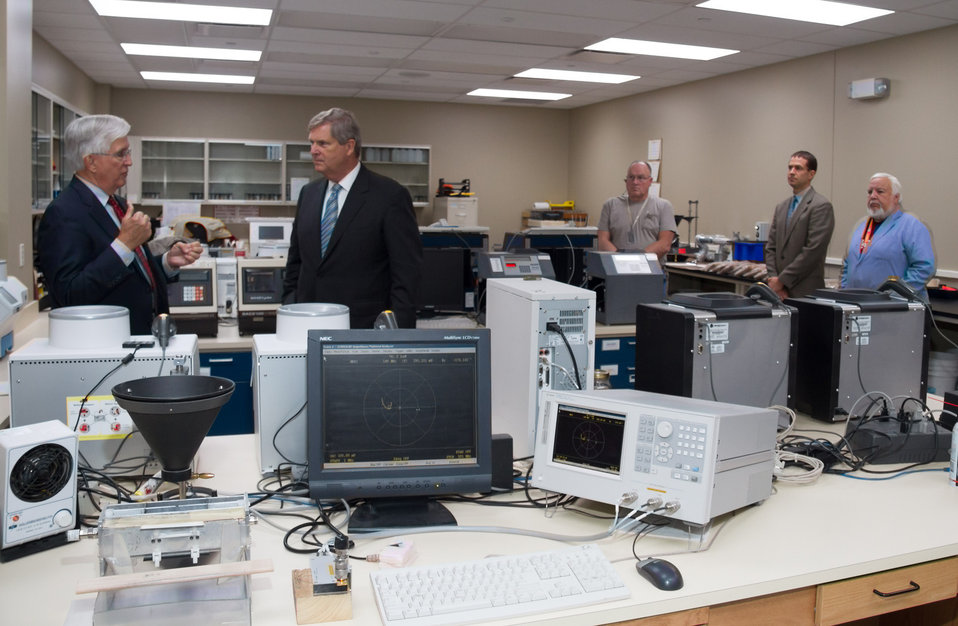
Dr. David Funk, (l), Grain Inspection, Packers and Stockyards Administration (GIPSA), Chief Scientist, describes GIPSA's grain moisture measurement program to Agriculture Secretary Tom Vilsack in Kansas City, MO on Wednesday, Oct. 23, 2013 as James Rhodes, Dr. Zoltan Gillay, and Steven Burton watch.